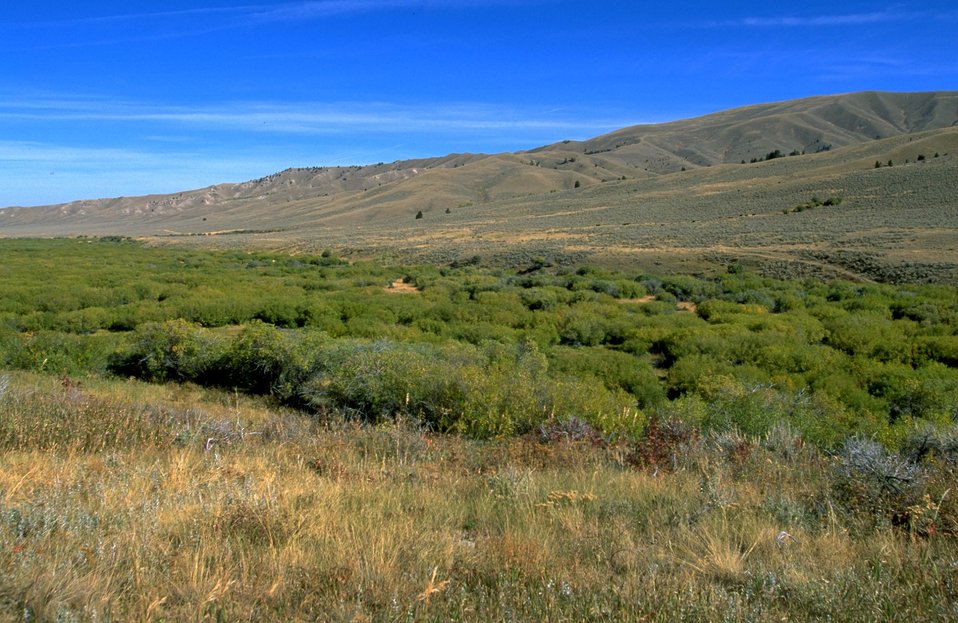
Willow bottom with sagebrush hillsides